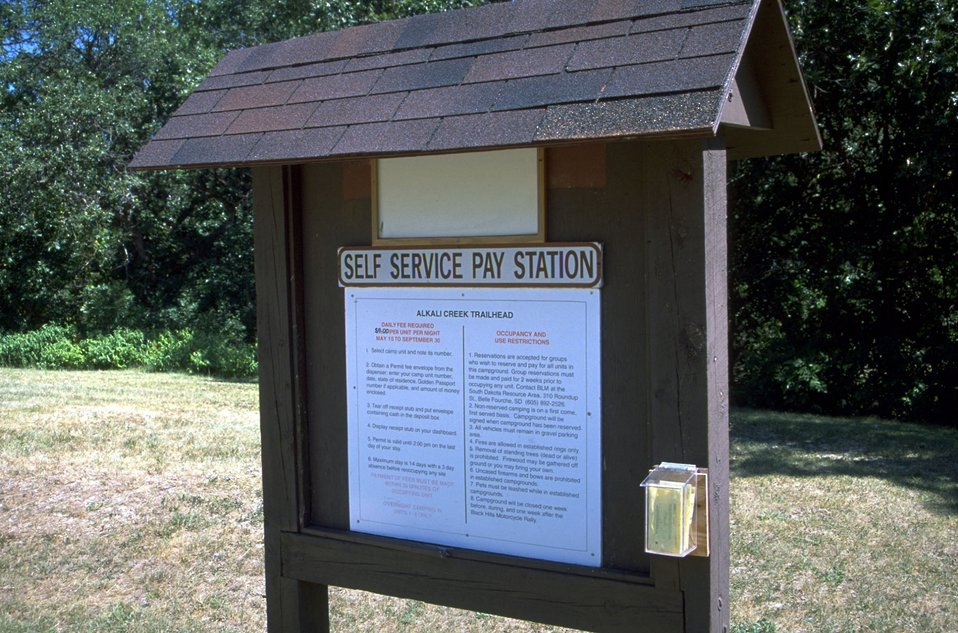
Kiosk at Alkali Creek TrailHead, Fort Meade